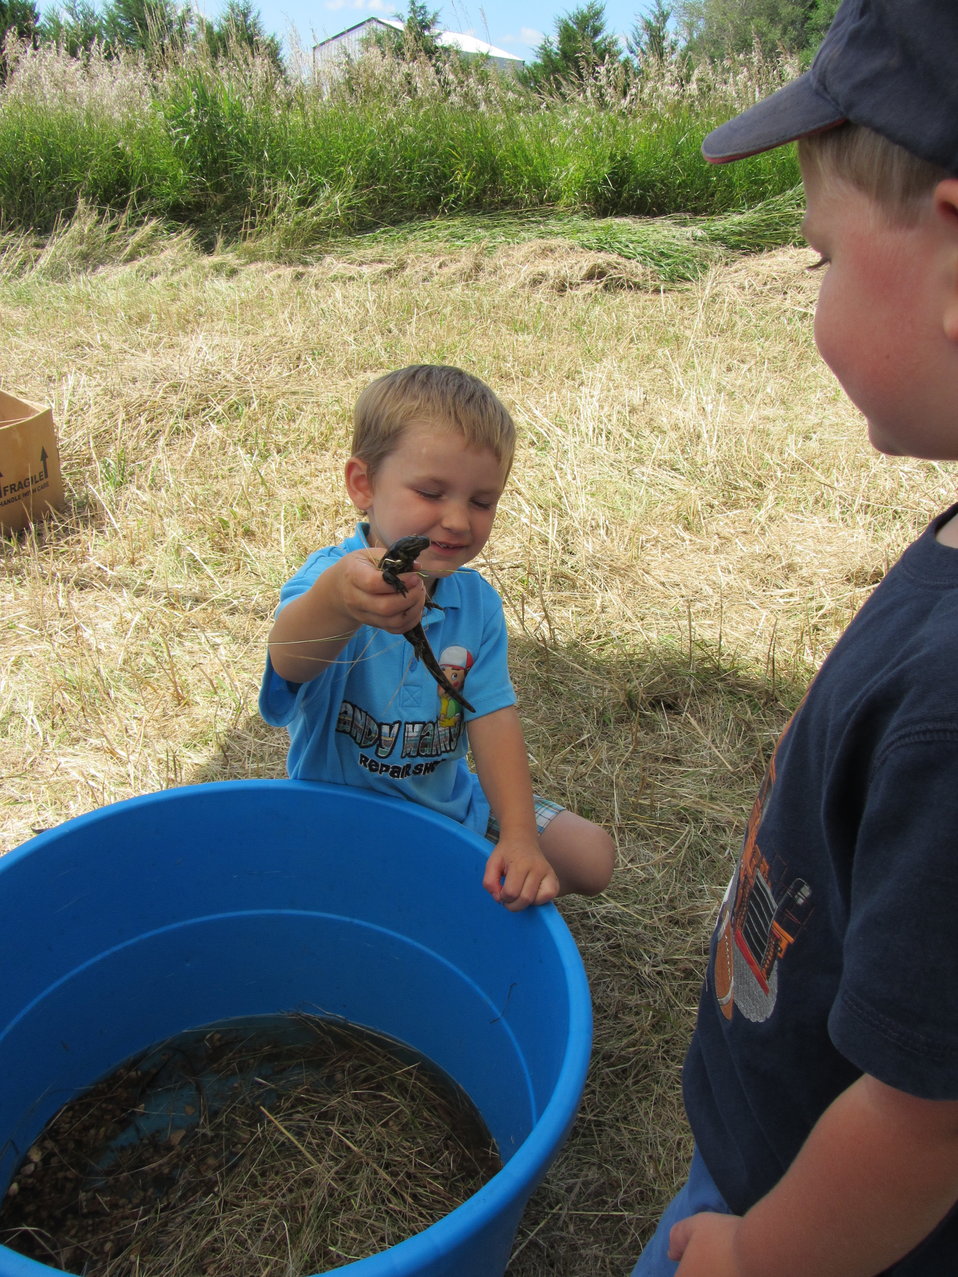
2011 Huron Prairie Fest

A little boy is playing with a salamander in our live animal tent.